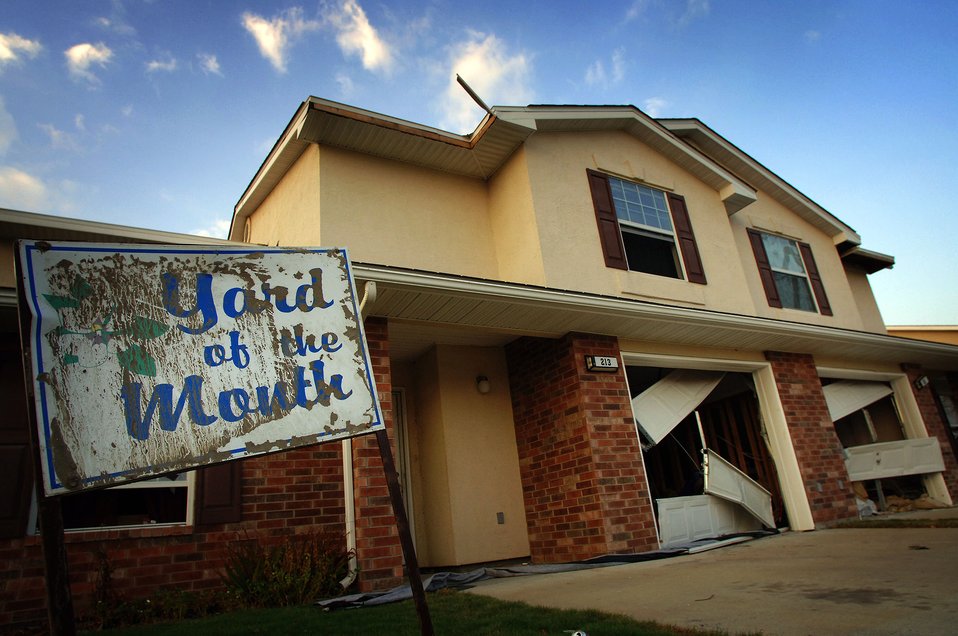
Trying to recover

KEESLER AIR FORCE BASE, Miss. -- The storm surge cause by Hurricane Katrina rose to well over six feet in some of the more harder hit areas of Keesler's base housing. Servicemembers and their families have slowly begun recovering their possessions.